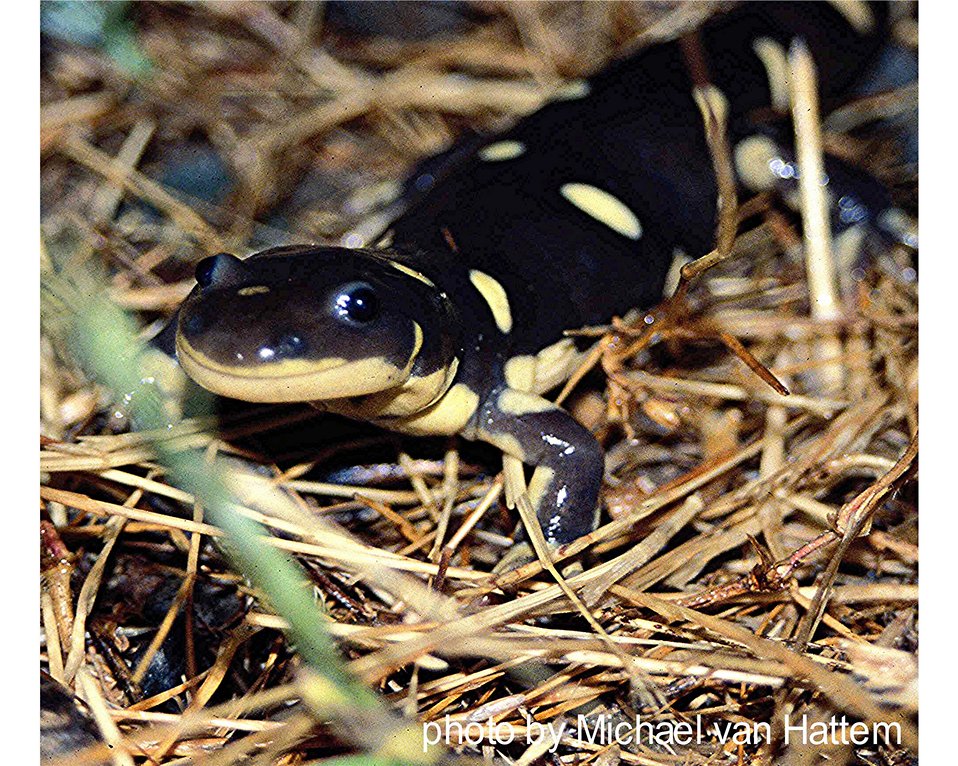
California Tiger Salamander